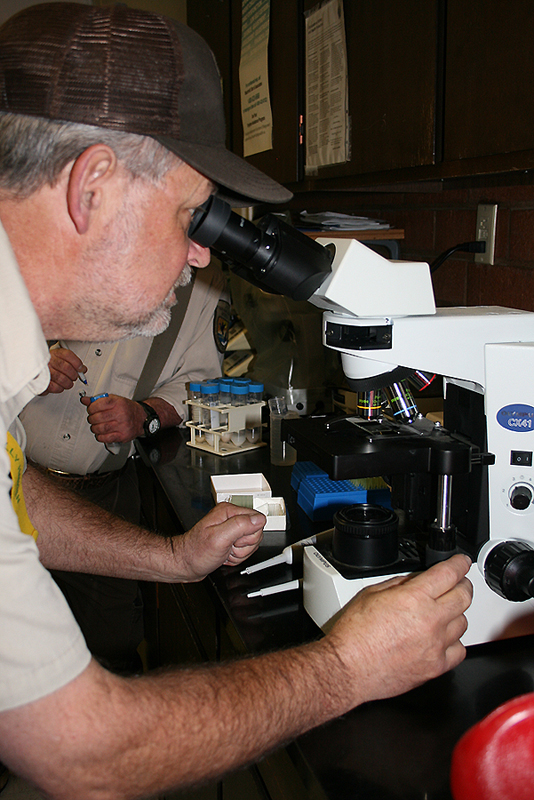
Fish Biologist analyzing milt count

Al Duncan uses a microscope to check that the milt removed from male Lahontan cutthroat trout is active and ready to be mixed with eggs.